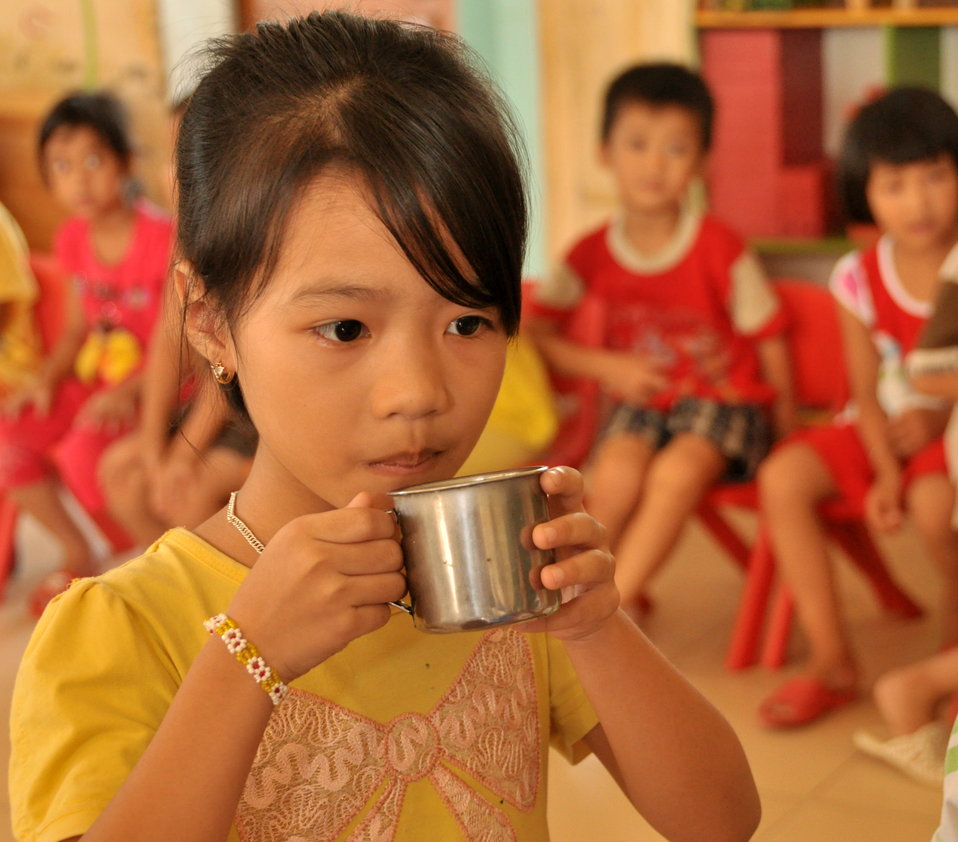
USAID Delivers Deworming Medication to Kindergartners in Nam Dinh Province

Children of Vietnam's Nam Dinh Province receive deworming medicine in a program supported by USAID and World Vision Australia.
June 1, 2013